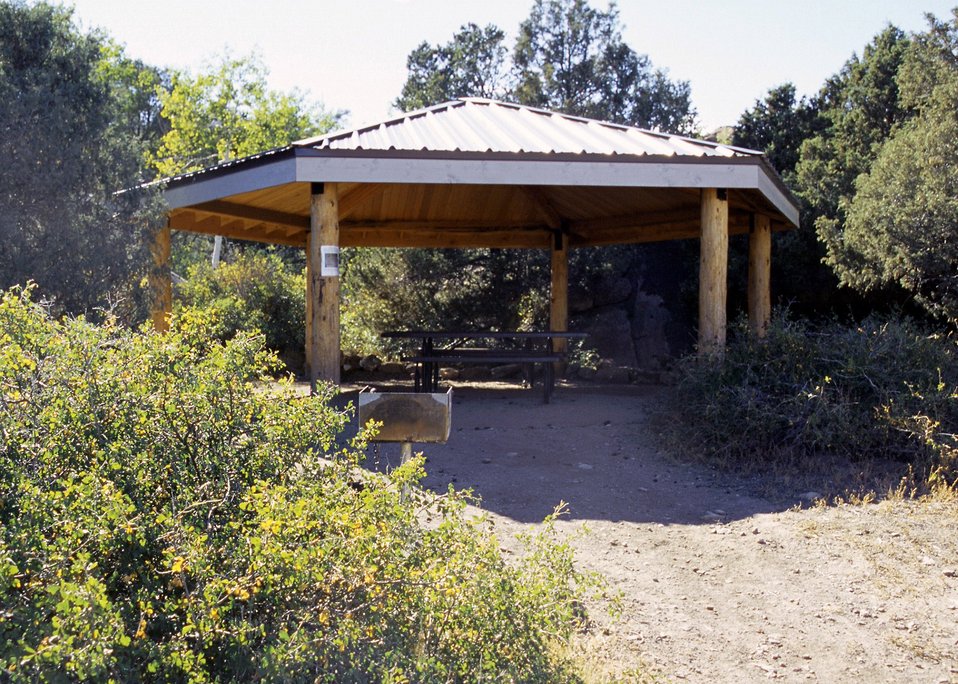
Pinic Shelter